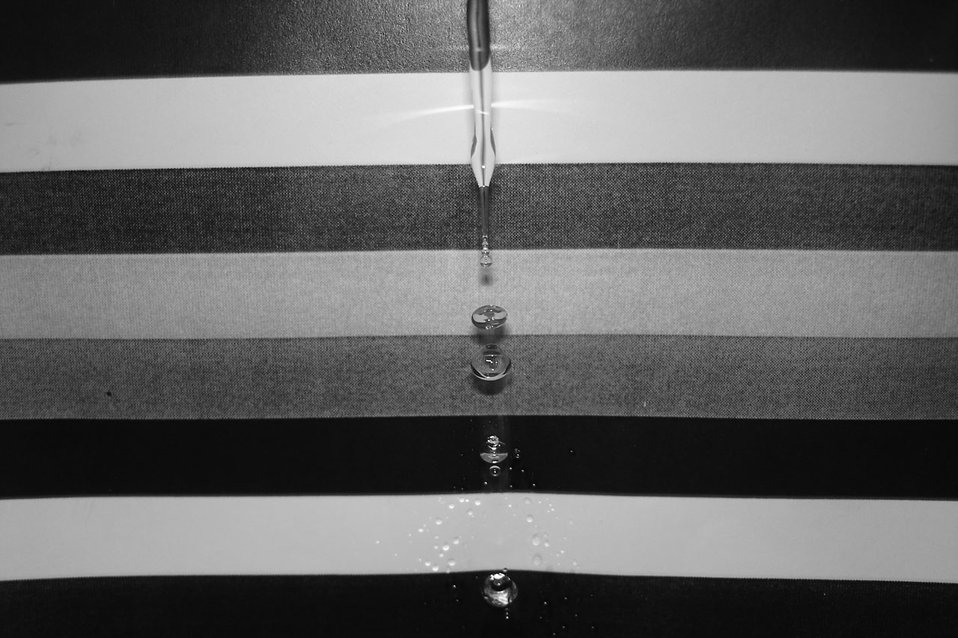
Water

Frozen water.